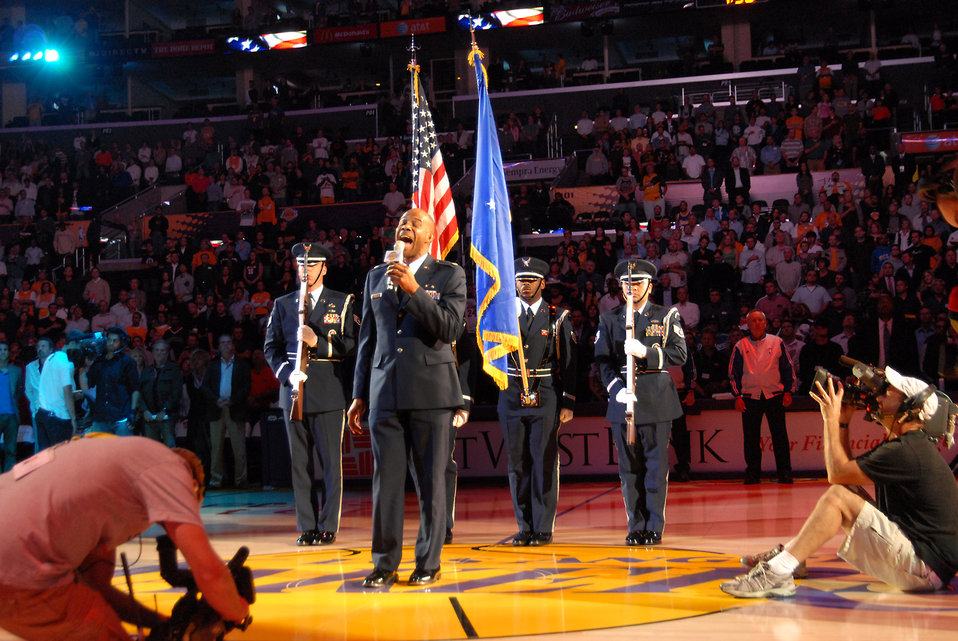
Air Force takes center stage as Bulls visit Lakers

Lt. Col. Ivan Thompson sings the national anthem before a Chicago Bulls and Los Angeles Lakers basketball game Nov. 18 at the Staples Center in Los Angeles. Colonel Thompson, the Reserve adviser at Los Angeles Air Force Base, Calif., performed the national anthem in front of nearly 20,000 fans at the game.